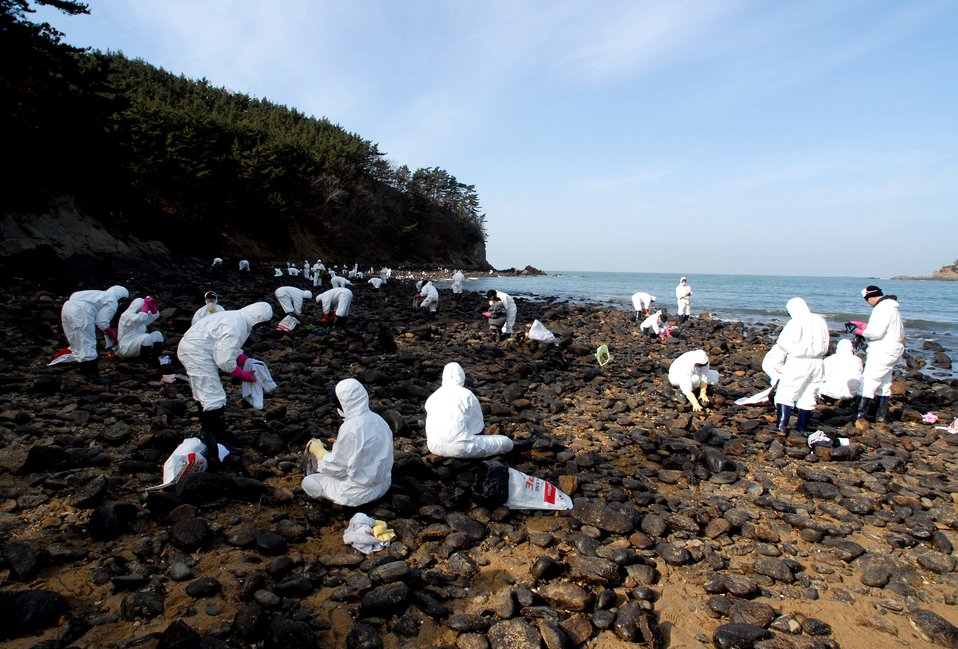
Airman, Soldiers aid local beach in oil spill clean-up

Airmen and Soldiers from Kunsan Air Base, South Korea, along with Korean nationals, clean rocks after a crude oil spill from a crane barge Dec.7. Over 200,000 volunteers assisted with the clean up of 2.7 million gallons of oil.